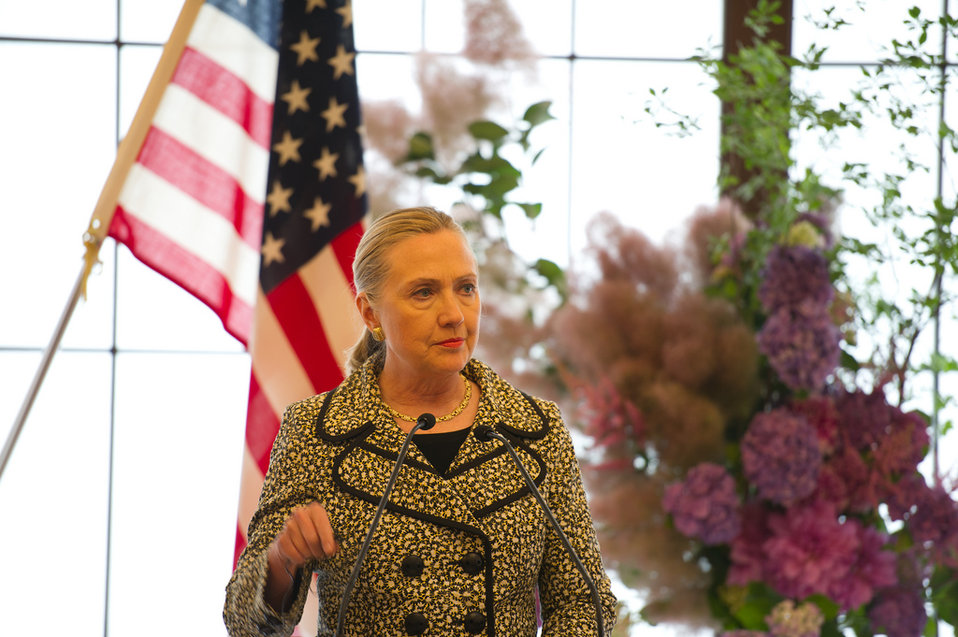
Secretary Clinton Addresses Reporters in Tokyo

U.S. Secretary of State Hillary Rodham Clinton and Japanese Foreign Minister Koichiro Gemba hold a joint press conference after the Tokyo Conference on Afghanistan in Tokyo, Japan, on July 8, 2012.